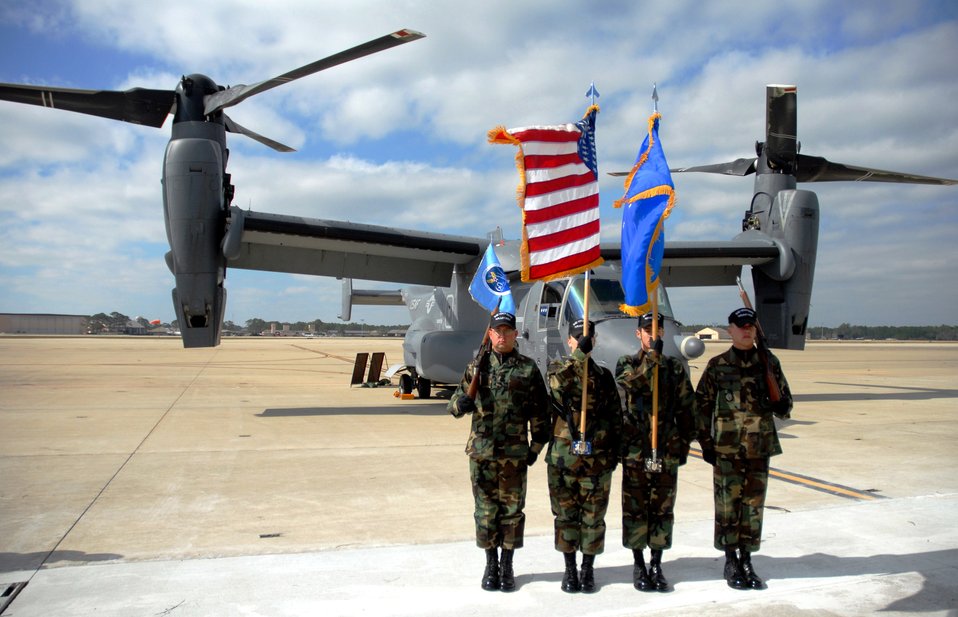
Heritage to horizons

Airman 1st Class Joshua Penery (left to right), Senior Airman Cody Husemann, Airman 1st Class Jeffrey Miller and Airman 1st Class Steven Bickell, members of the 16th Special Operations Wing Honor Guard, perform in front of a CV-22 Osprey during the Air Force 60th Anniversary commemoration held at Hurlburt Field, Fla., on Nov.16. The commemoration was marked by the arrival of the CV-22 Osprey to Hurlburt Field and the redesignation of Air Force Special Operations Command's 16th Special Operations Wing as the 1st SOW.